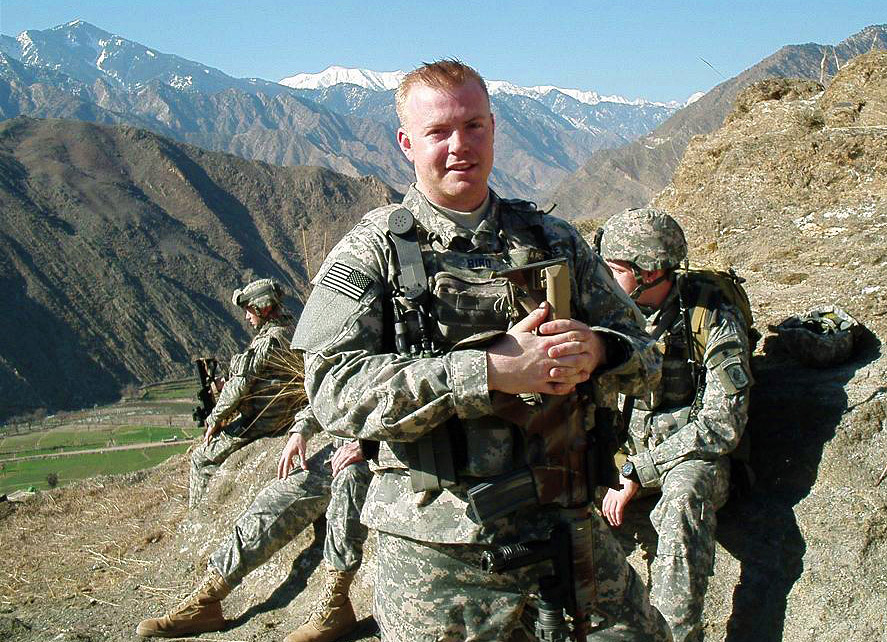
JTAC Airman brings target strike experience to hurricane response

Senior Airman Gabe Bird takes a break during a mission while he was deployed to Afghanistan earlier this year. Airman Bird is assigned to the 122nd Air Support Operations Squadron in New Orleans. Airman Bird is a joint terminal attack controller.